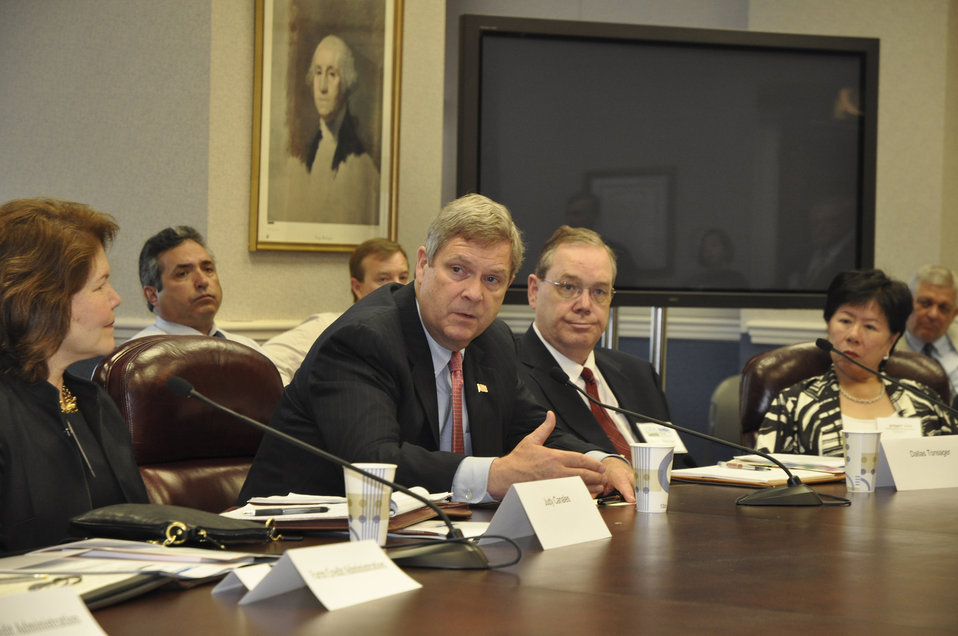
Agriculture Secretary Tom Vilsack makes remarks at the National Lenders Roundtable meeting held at the U.S. Department of Agriculture in Washington, D.C., on Wednesday, May 26, 2010. USDA Photo 10di1378-031.